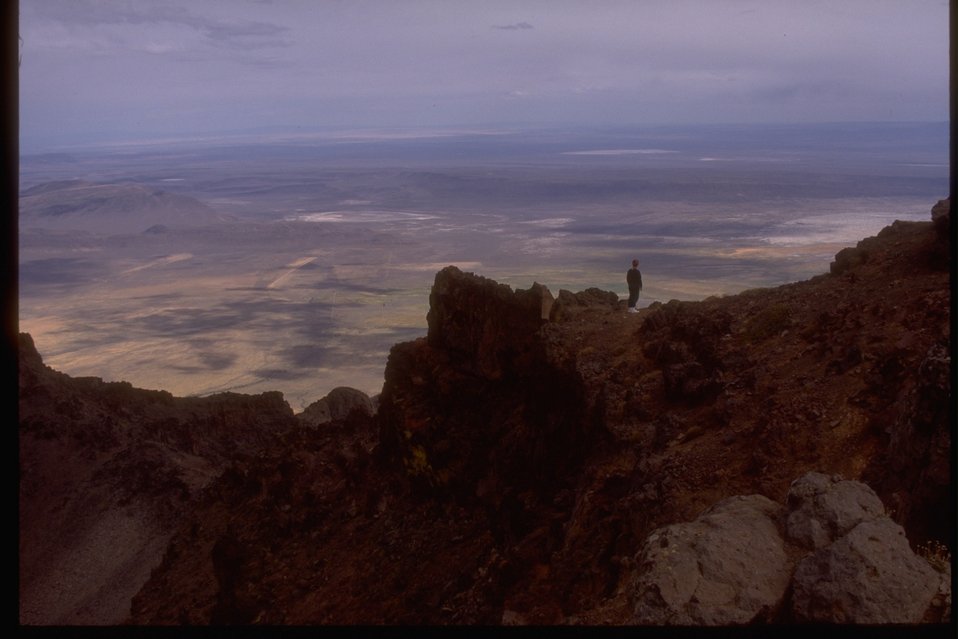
Scenic view over Steens Summit.